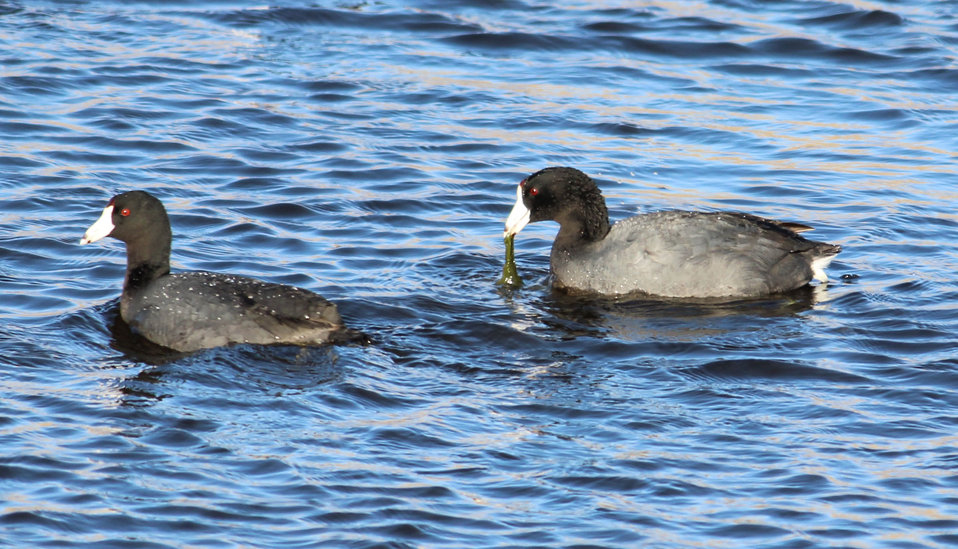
You're Eating What?!?

The American Coot (Fulica americana) looks like a duck, but it is not a duck. It is more closely related to rails. They eat mostly aquatic vegetation like duckweed, algae, water milfoil, cattails, and lily pads, but also eat insects, snails, and other small crustaceans or vertebrates.